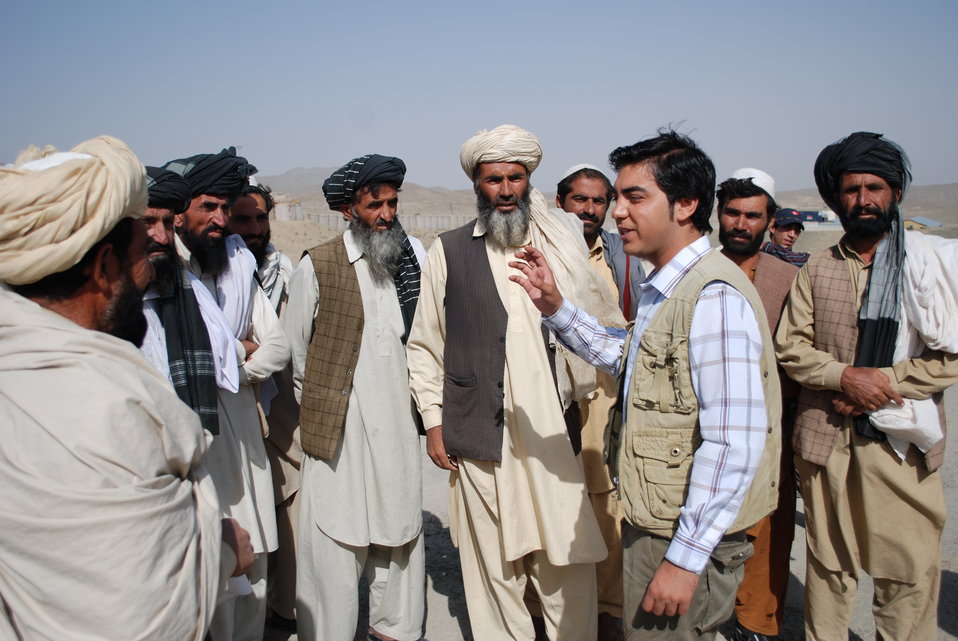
'On the Road' in Paktya Province